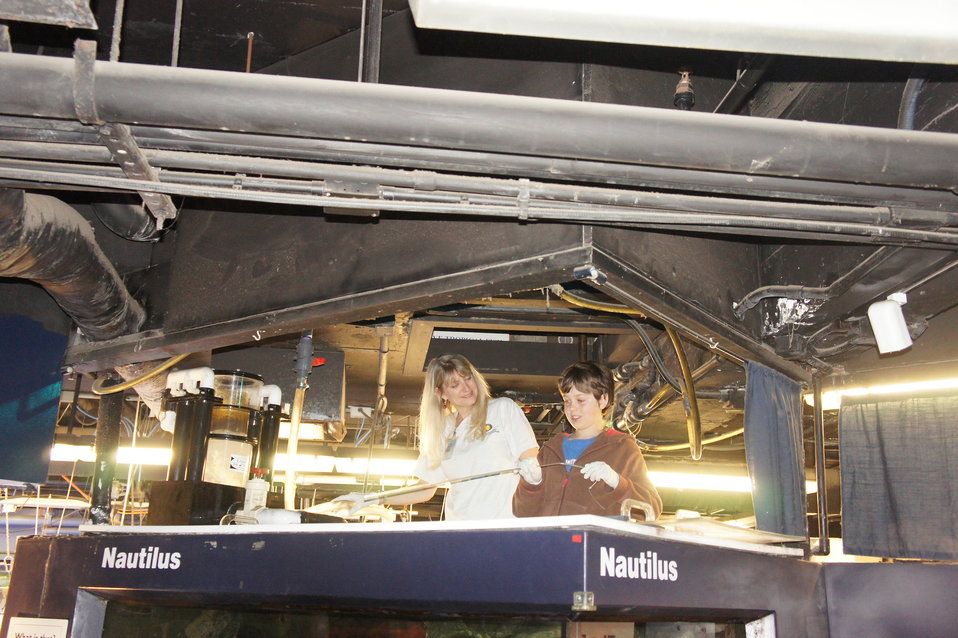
'Save the Nautilus' co-founder visits Smithsonian National Zoo

Josiah Utsch, co-founder of www.savethenautilus.com, assists with feeding the chambered nautilus at the Smithsonian National Zoo.